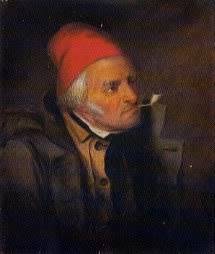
'Man With Red Hat and Pipe', oil painting by Cornelius Krieghoff, 13 x 11 in.